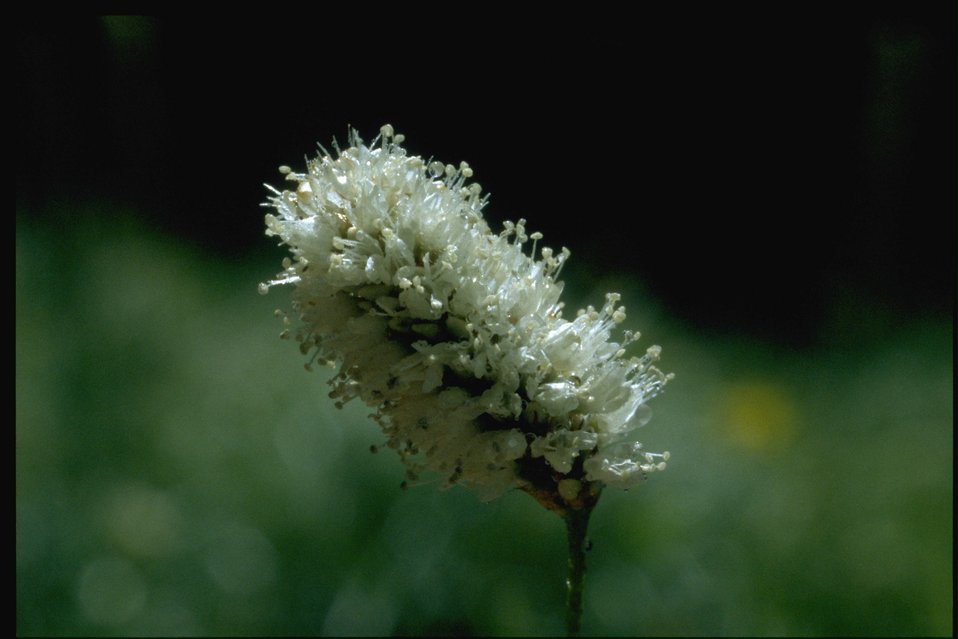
Medium shot of Polygonum bistortoides.